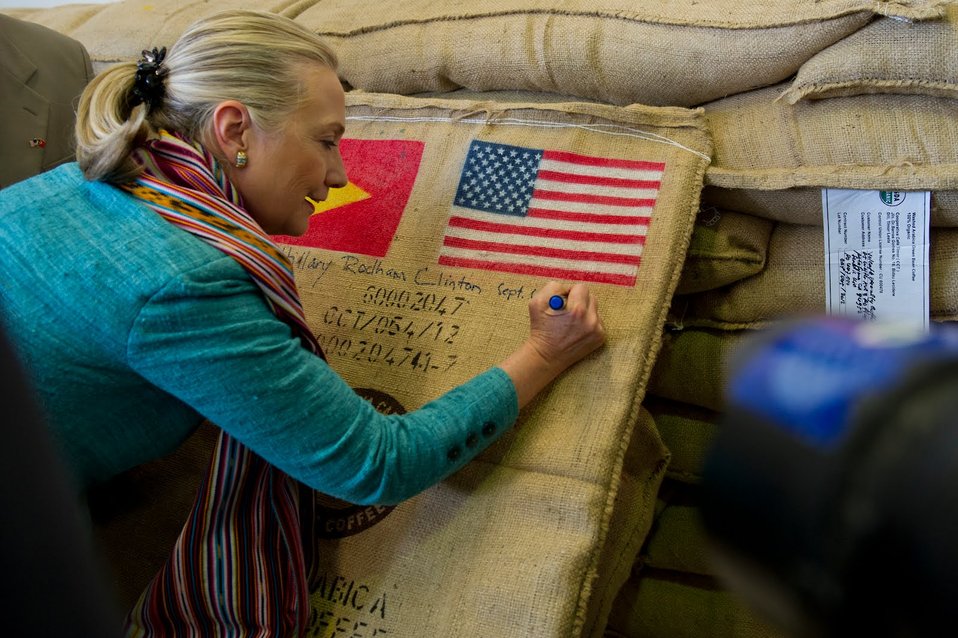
Secretary Clinton Signs a Bag of Organic Coffee

U.S. Secretary of State Hillary Clinton signs a bag of organic coffee at Cooperativa Cafe Timor in Dili, Timor-Leste, September 6, 2012. The coop raises rural incomes, employs women, and produces Timor-Leste's only major non-oil export, now reaching more than 23,000 families, or more than 10 percent of the population.